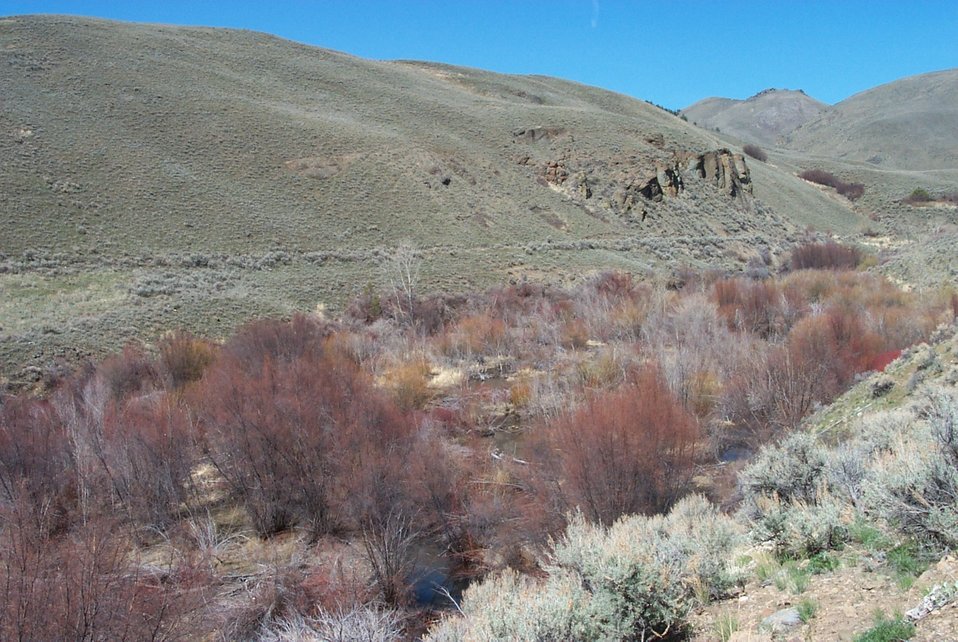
Salmon Field Office Realty Public access Exchange UCSC Upper Columbia Salmon Clearwater District